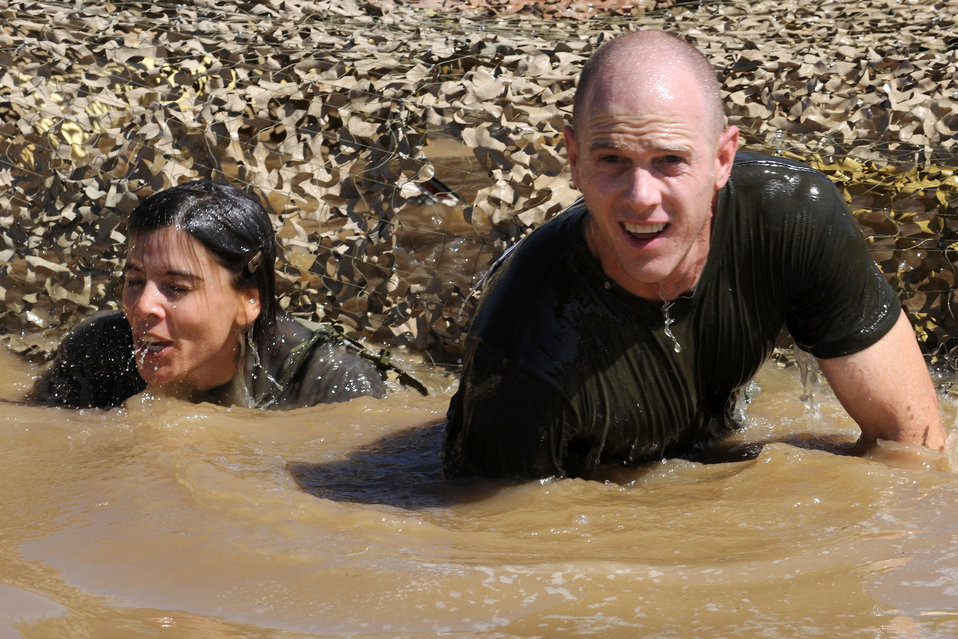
Kyrgystan 5K Mud Run

Airmen make their way through the mud pit during the 5K mud run at the Transit Center at Manas, Kyrgyzstan, July 11, 2010. Airmen took part in the course to help raise money for charity.